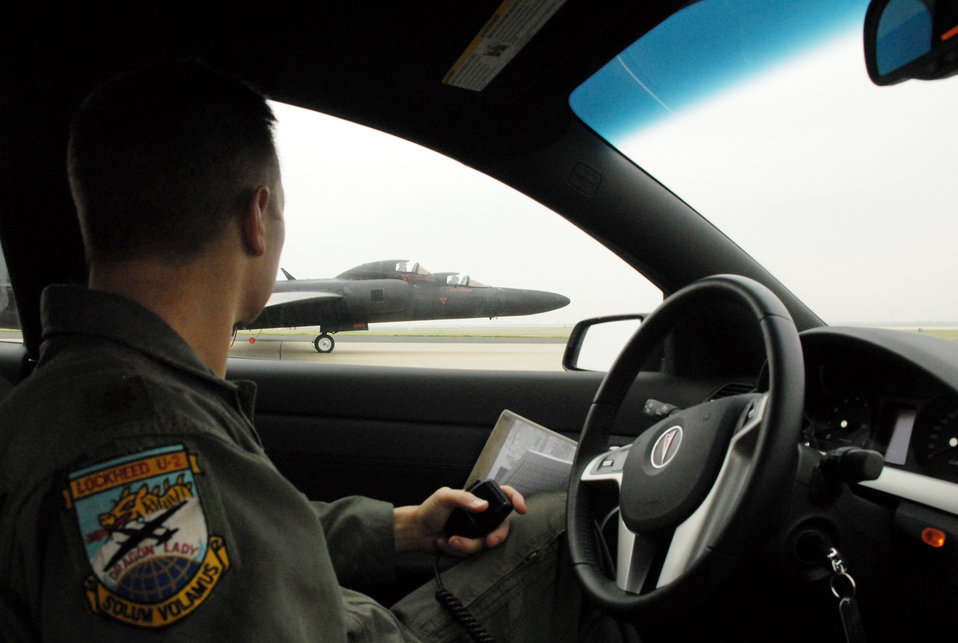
U-2 Chase Car

Maj. Luke Lokowich, with the 1st Reconnaissance Squadron at Beale Air Force Base, Calif., drives around a U-2 reconnaissance aircraft on the runway at Beale AFB Feb. 4, 2010, while keeping in constant contact with the pilot in the cockpit. The U-2 chase car is the pilot's extra eyes and ears on the ground during flight operations.